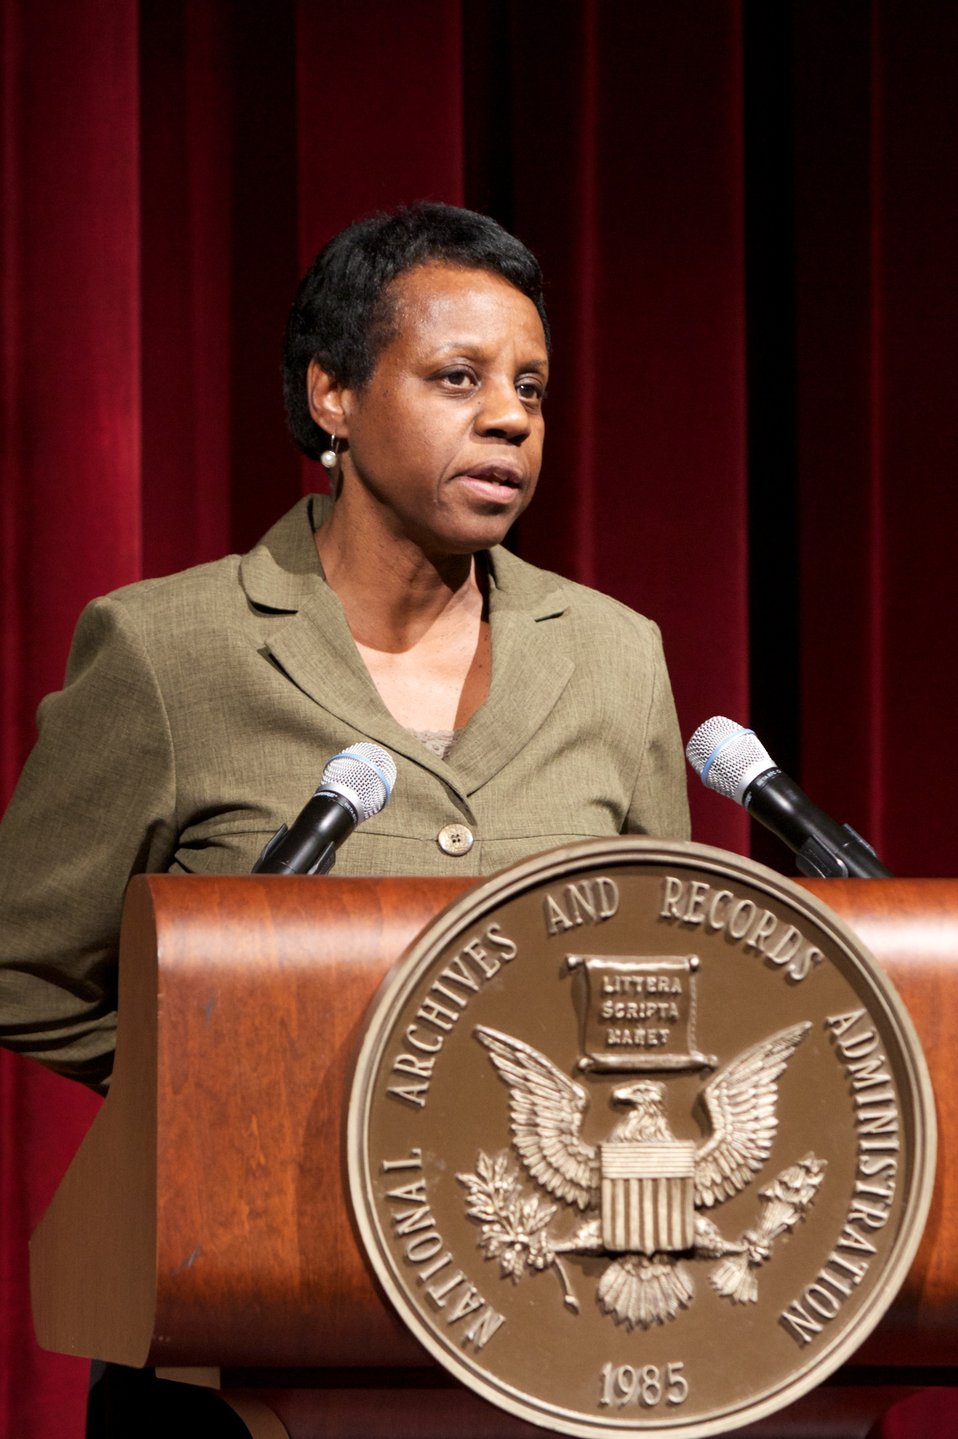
The Gettysburg Story and The Wheatfiled

The Gettysburg Story and The Wheatfield; Maria Marable-Bunch, Director of Education and Public Programs, provides opening comments